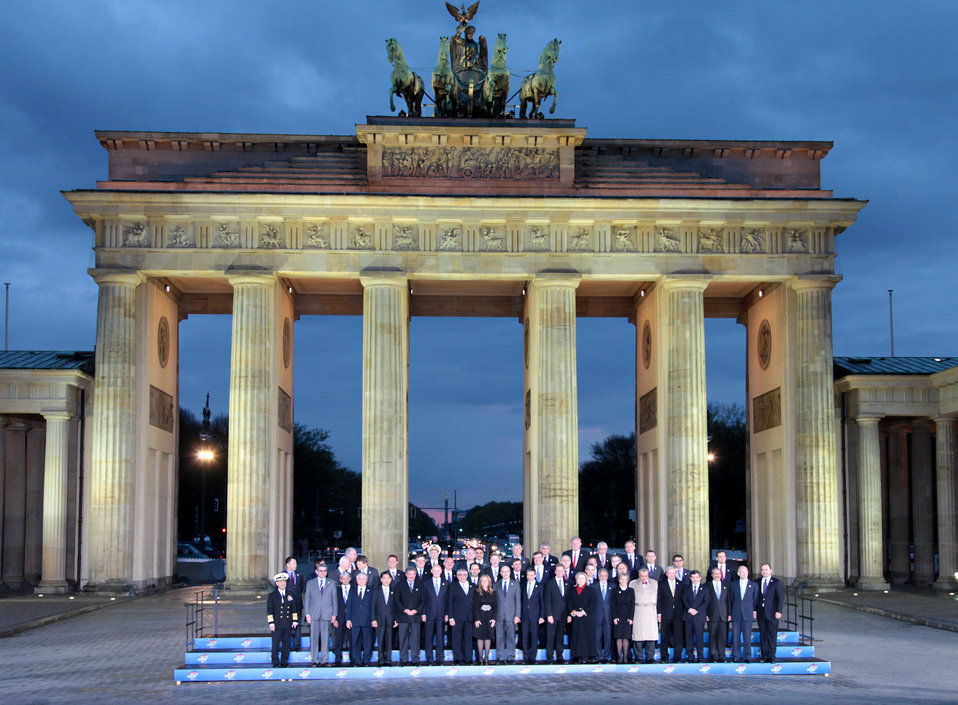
Secretary Clinton Poses for a Family Photo With NATO Foreign Minister Counterparts

U.S. Secretary of State Hillary Rodham Clinton poses for a family photo with NATO Ministers of Foreign Affairs, at the Brandenburg Gate in Berlin, Germany, on April 14, 2011.